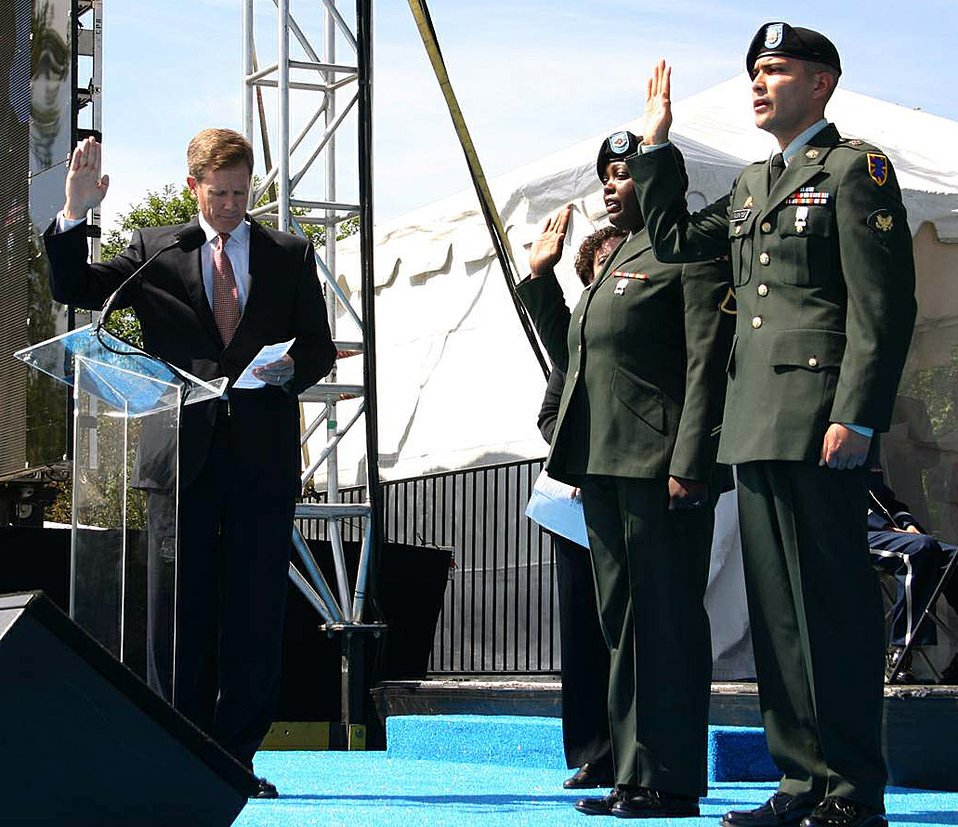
Airmen honor America's fallen

Jonathan Scharpen (left) administers the oath of citizenship to Army Spc. Nakisha Simon and Army Spc. Morgan Facundo at the National Tribute to Honor America's Fallen and Their Families Sept. 20 in Washington, D.C. Mr. Scharpen is the director of U.S. Customs and Immigration Service.